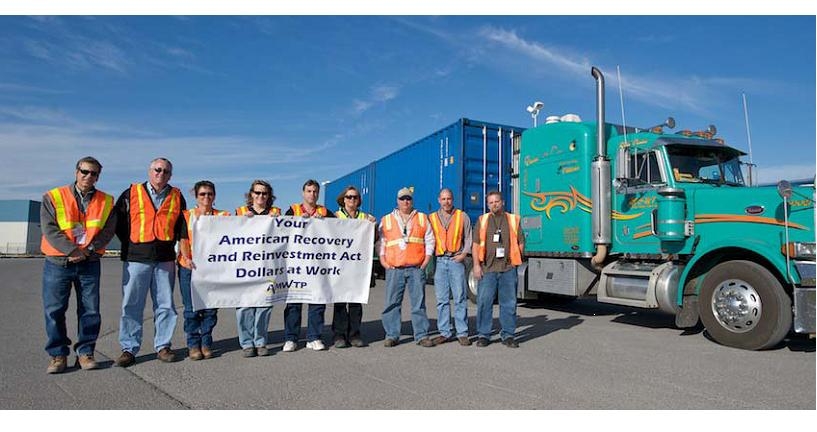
AMWTP Shipment

Advanced Mixed Waste Treatment Project